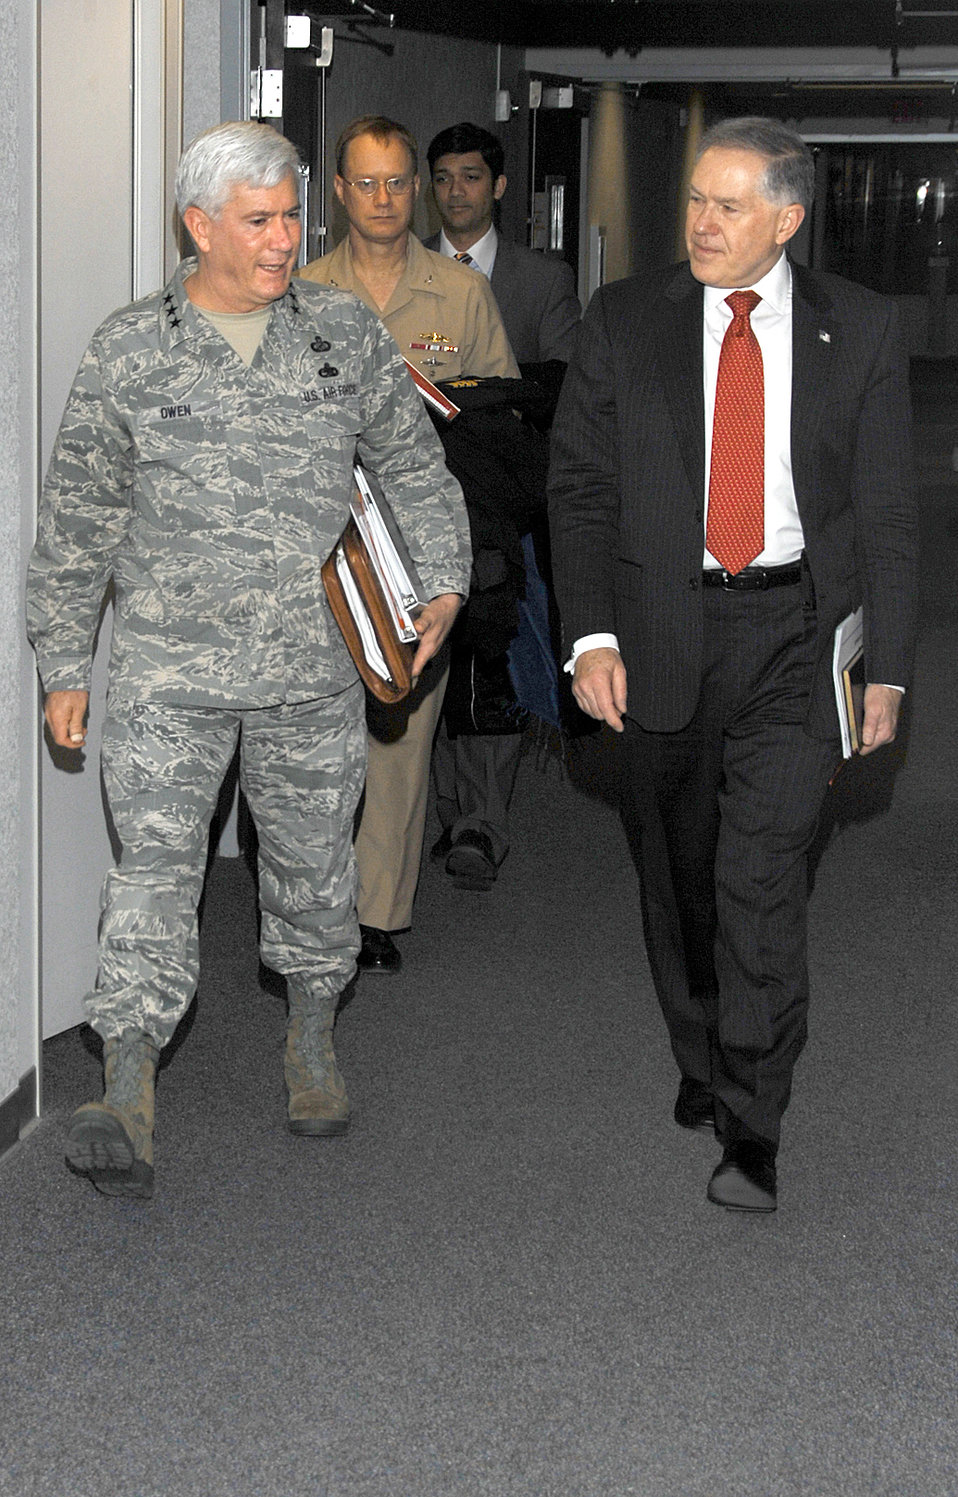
Honorable Frank Kendall Visits ASC

Lt. Gen. Tom Owen escorts Principal Deputy Under Secretary of Defense for Acquisition Technology and Logistics Frank Kendall to a meeting with Air Force program executive officers and Aeronautical Systems Center senior leaders. Mr. Kendall was here to brief on a series of initiatives to increase efficiency in the acquisition system. General Owen is the ASC commander.